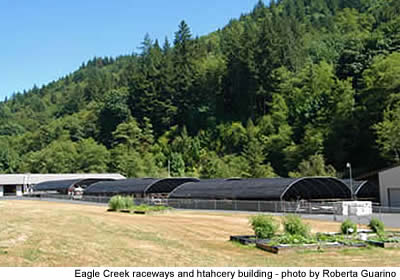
Eagle Creek National Fish Hatchery

Fish hatchery buildings at Eagle Creek National Fish Hatchery.